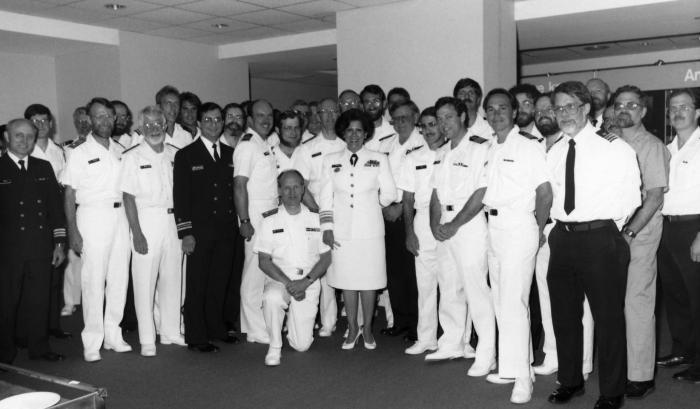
This 1986 photograph, taken during the Centers for Disease Control's 40th anniversary ceremony, showed members of the Centers for CDC's Office of the Director, who at the time was Dr. James O. Mason. Dr. Mason's Directorship took place from 1983 until 1989.